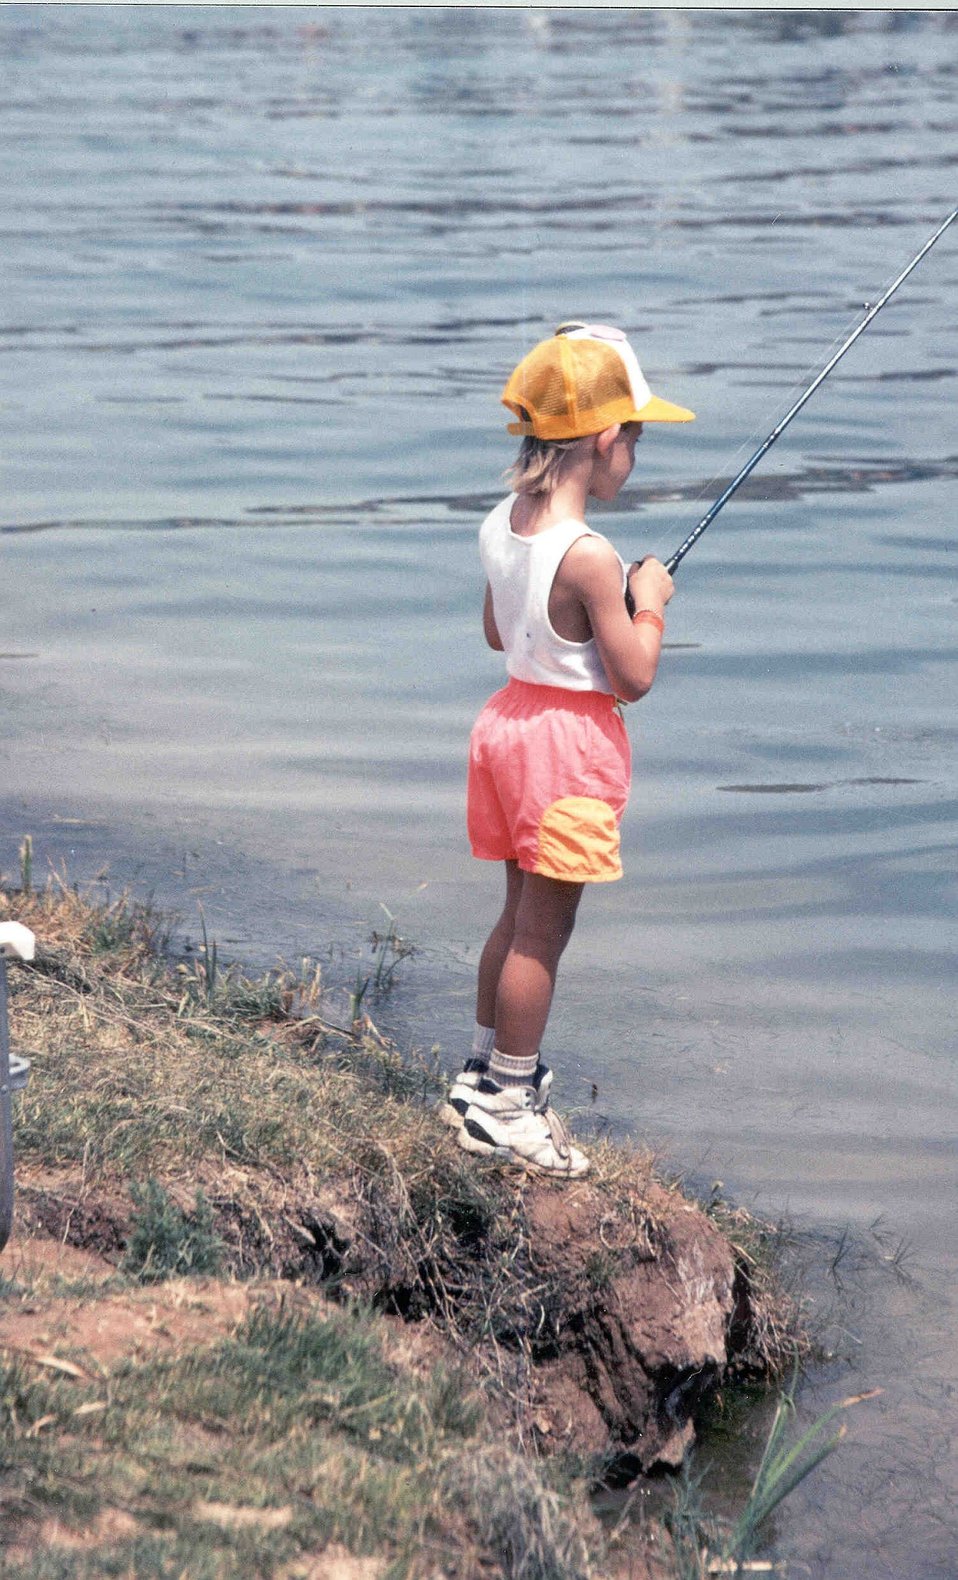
Small child fishing on the banks of the Lower Colorado River.